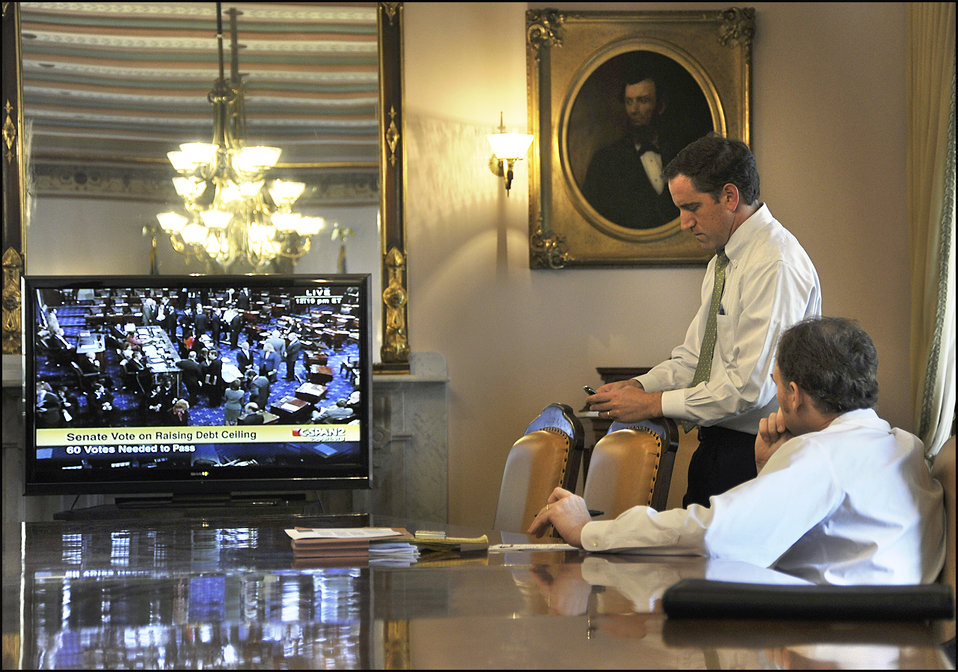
Behind the Scenes: Debt Limit

Staff watch the Senate vote on raising the debt limit on Tuesday, August 2, 2011.